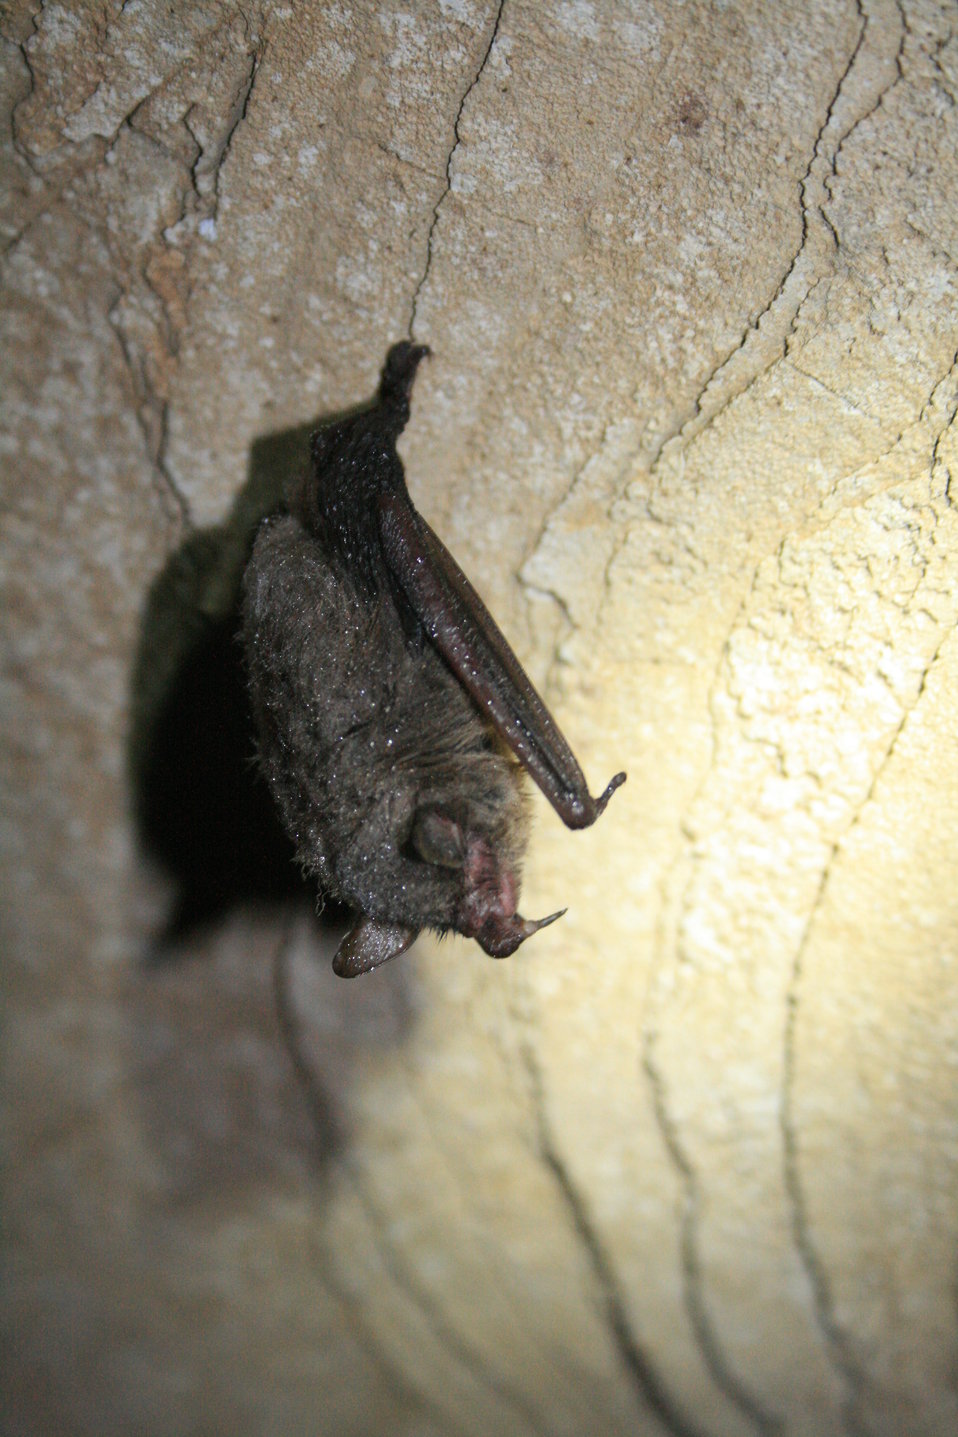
healthy hibernating Indiana bat

Myotis sodalis